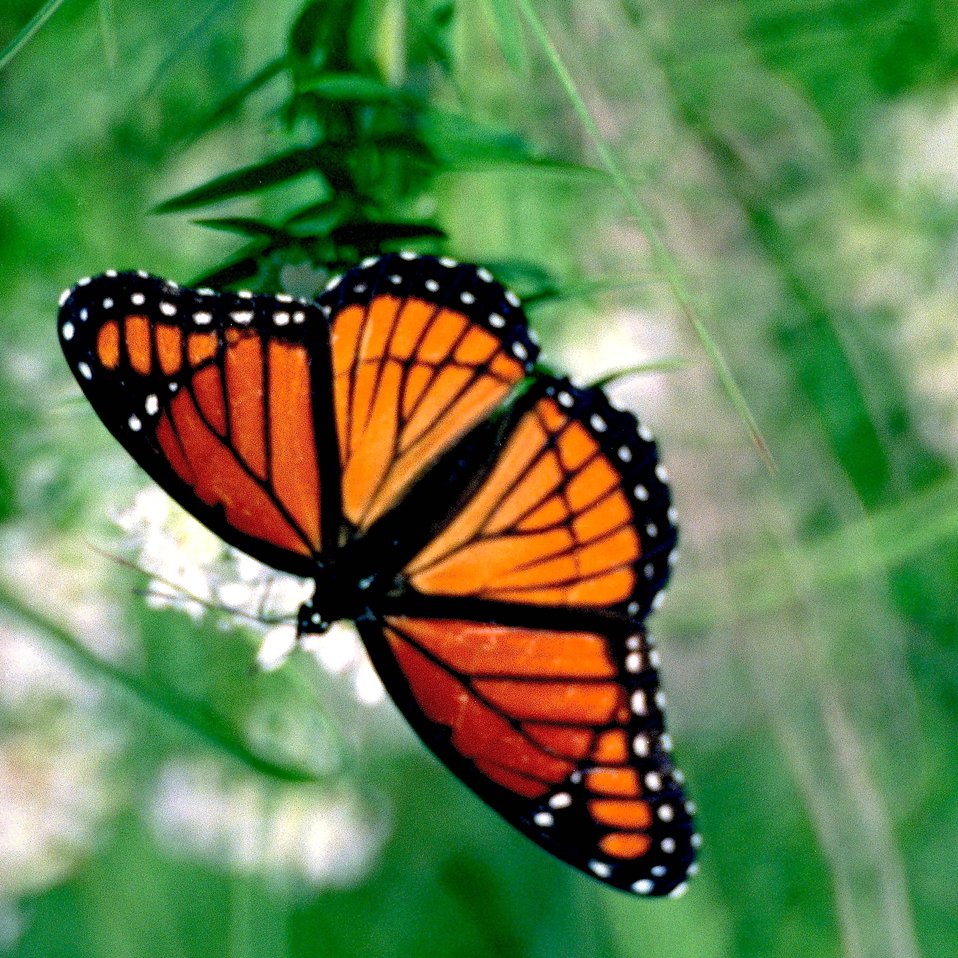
BUTTERFLY AT FERMILAB SITE.

IN AN EFFORT TO RECOGNIZE AND PRESERVE ITS PRAIRIE HERITAGE, FERMILAB ENCOURAGES NATURAL PRAIRIE LIFE AND VEGETATION. THE FERMI NATIONAL ACCELERATOR LAB ADVANCES THE UNDERSTANDING OF THE FUNDAMENTAL NATURE OF MATTER AND ENERGY BY PROVIDING LEADERSHIP AND RESOURCES FOR QUALIFIED RESEARCHERS TO CONDUCT BASIC RESEARCH AT THE FRONTIERS OF HIGH ENERGY PHYSICS AND RELATED DISCIPLINES.